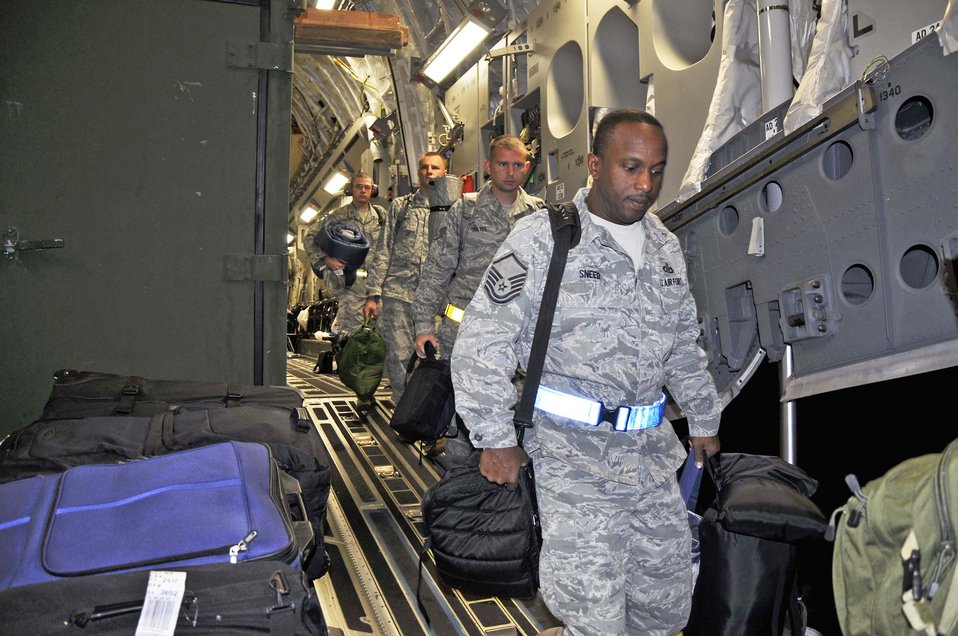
Airmen arrive in Thailand for Cope Tiger 2010

Master Sgt. Ray Sneed disembarks a C-17 Globemaster III Feb. 26, 2010, at Udon Thani Royal Thai Air Force Base, Thailand. Sergeant Sneed, from the 15th Operations Support Squadron at Joint Base Pearl Harbor-Hickam, Hawaii, is one of approximately 500 Airmen who will participate in Cope Tiger 2010, an annual training exercise in Thailand involving the U.S. Air Force, Royal Thai Air Force and Army, and the Republic of Singapore Air Force March 1-12.